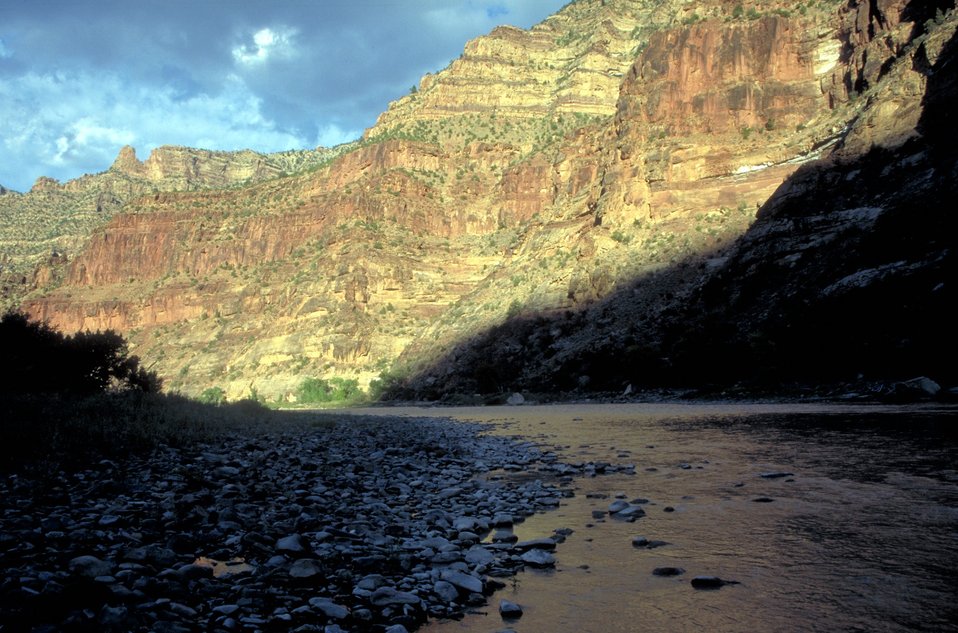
Desolation/Gray Canyons near Price, Utah.